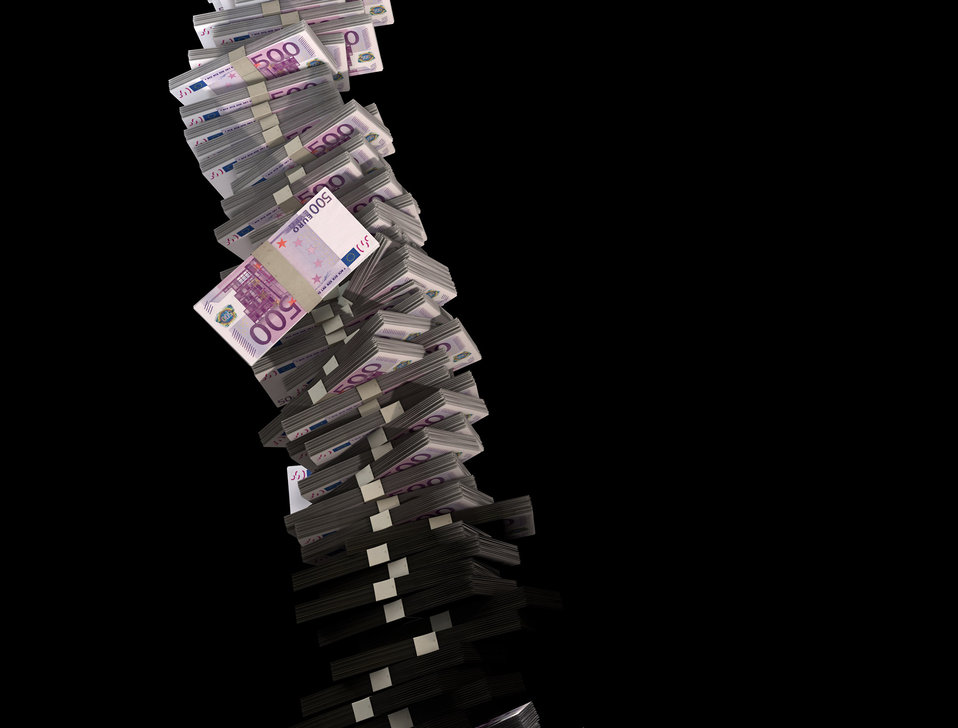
Tower of 500 euro money

A tower of 500 euros on a black background.